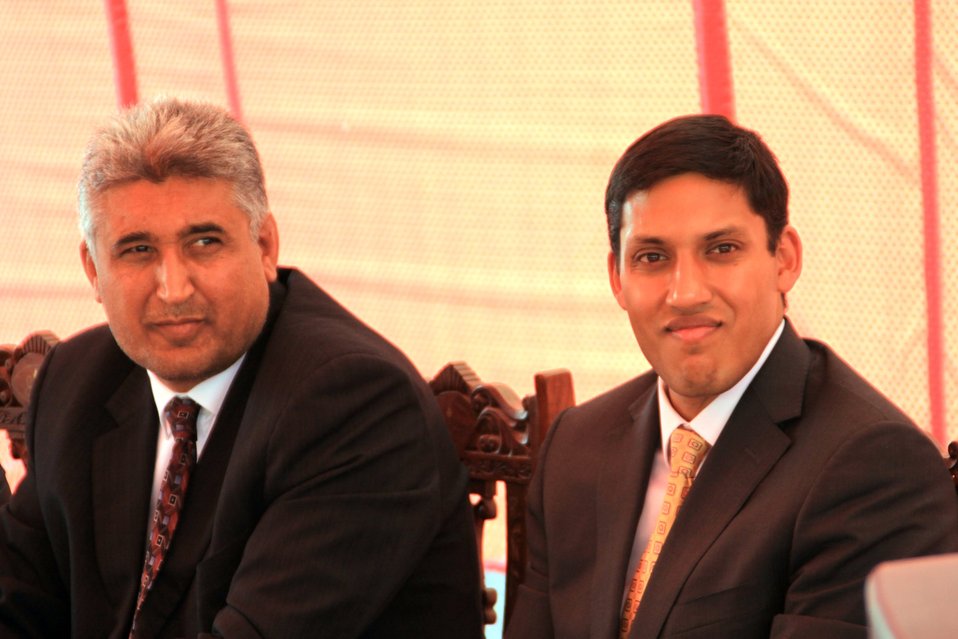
Baddam Bagh Farm